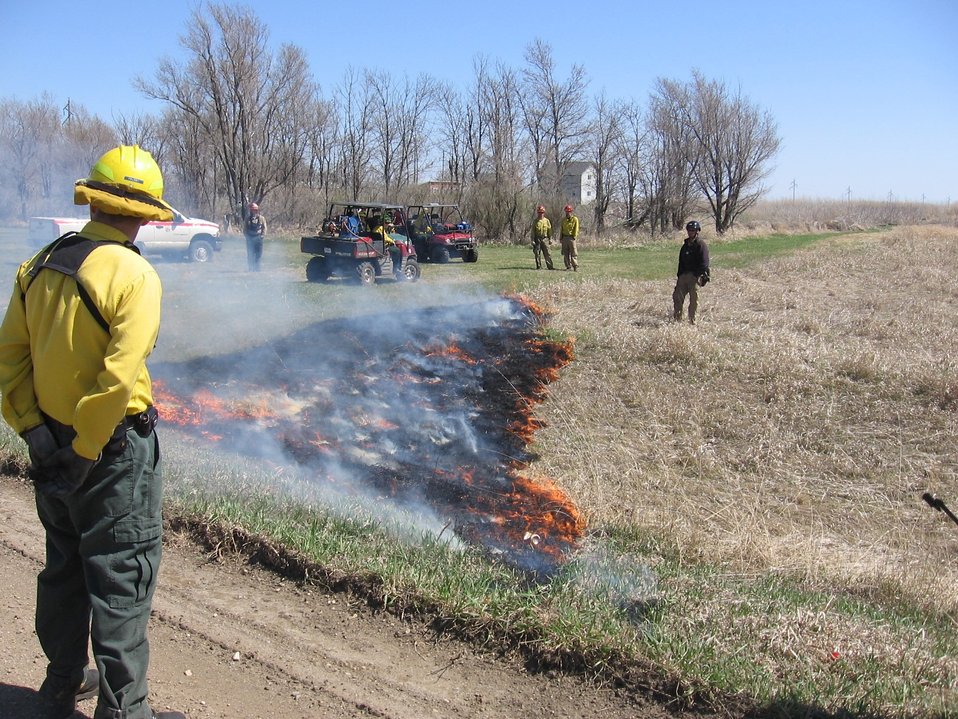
Prescribed burn on our Maga Ta-Hohpi WPA in 2009.